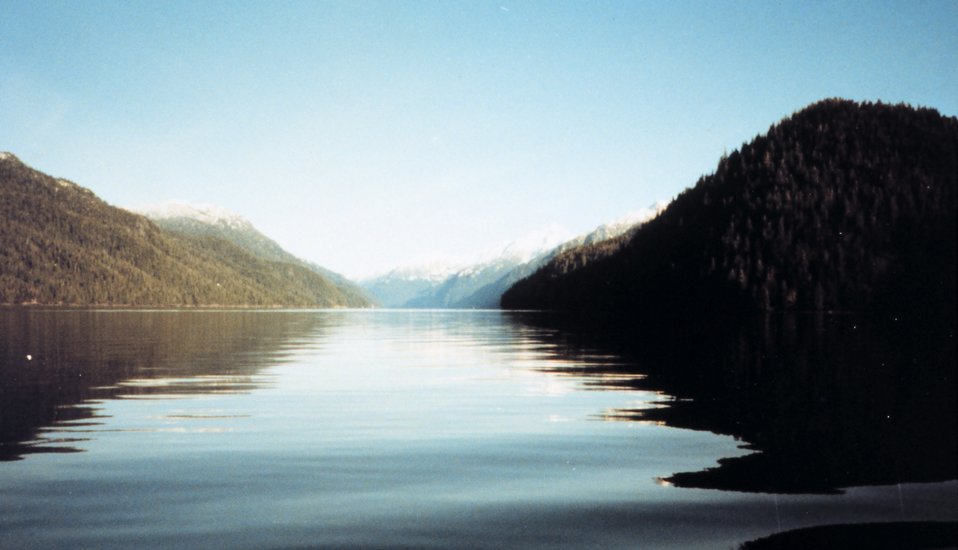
Boca de Quadra